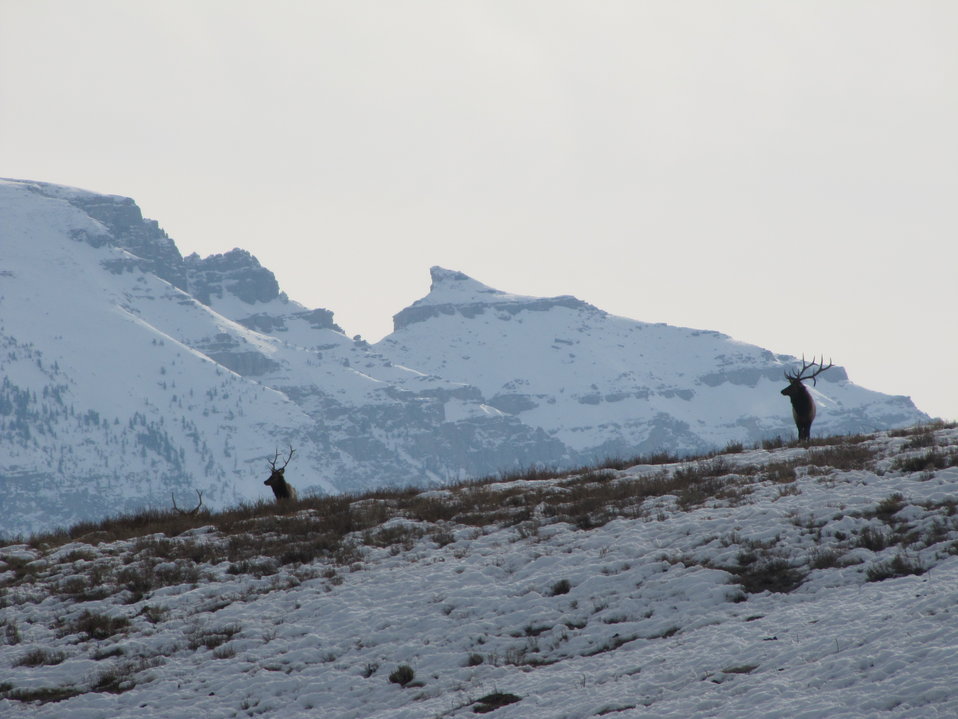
In Front of the Sleeping Indian

Several bulls stand on a ridgetop with Sheep Mountain in the background.

Sheep Mountain is locally referred to as Sleeping Indian because of its resemblance to a Native American, complete with headdress, lying on his back with his arms crossed on his chest. Here, the crooked nose and face of the perceived figure can be seen.